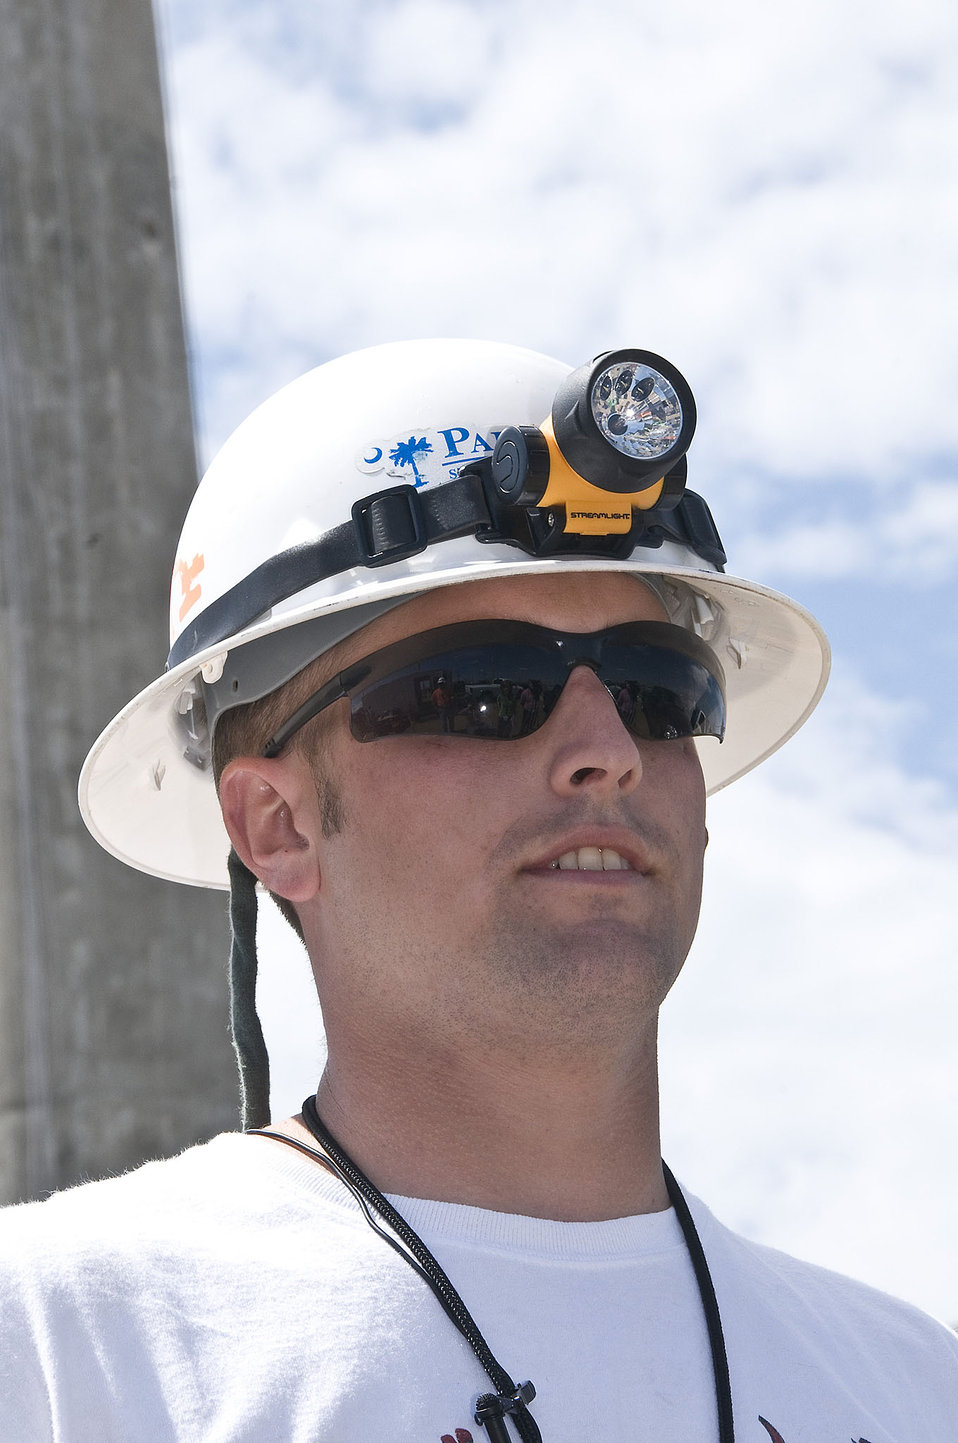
Safety and Training Key to Stack Reduction Demolition

Waste technician Blake Bowers knows the training he has received as a Recovery Act worker will help him for years to come.